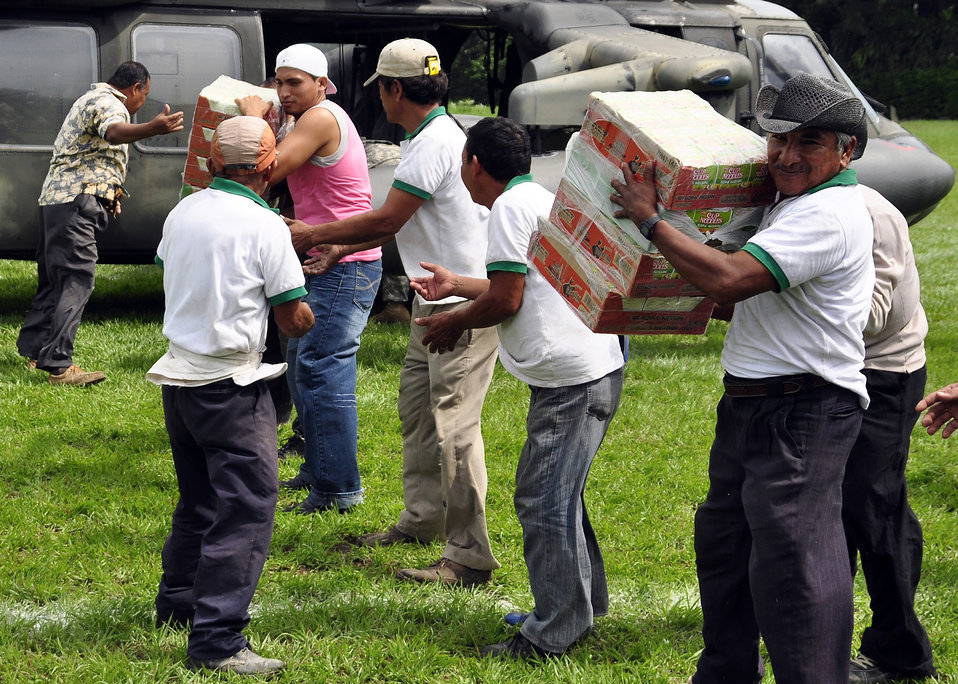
Joint Task Force-Bravo members help victims of Guatemala disaster

Residents of Masagua, Guatemala, offload food and water from a Joint Task Force-Bravo UH-60 Blackhawk June 3, 2010. Joint Task Force-Bravo deployed four helicopters, at the request of the Guatemalan government, to support disaster relief efforts following the Pacaya volcano eruption and Tropical Storm Agatha. Joint Task Force-Bravo's helicopters and personnel transported nearly 53,000 pounds of relief supplies June 3 through 4 to Guatemalan communities in need.